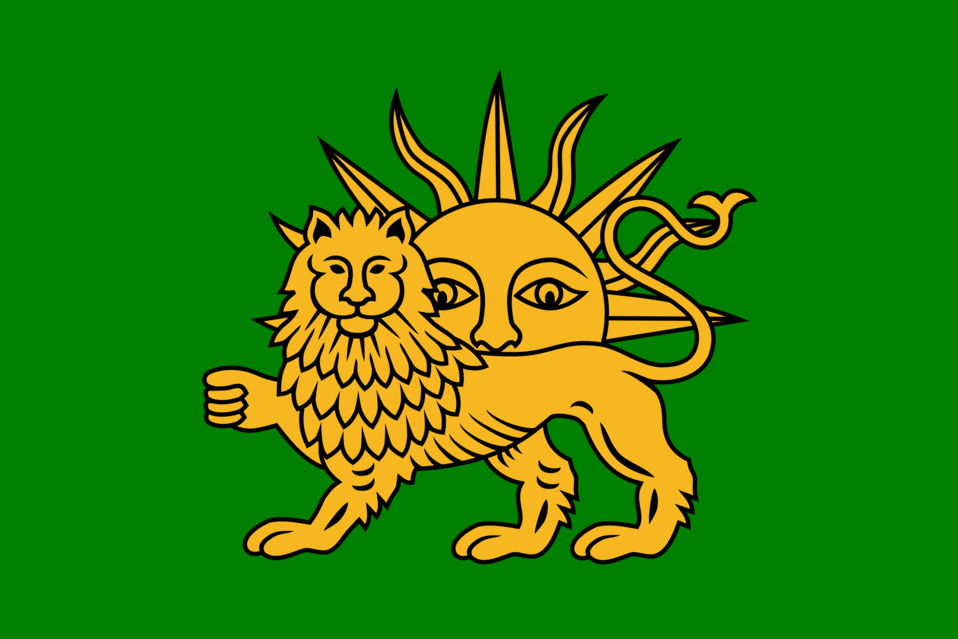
Flag of the Safavid Dynasty from 1576[1] to 1666[2][3]